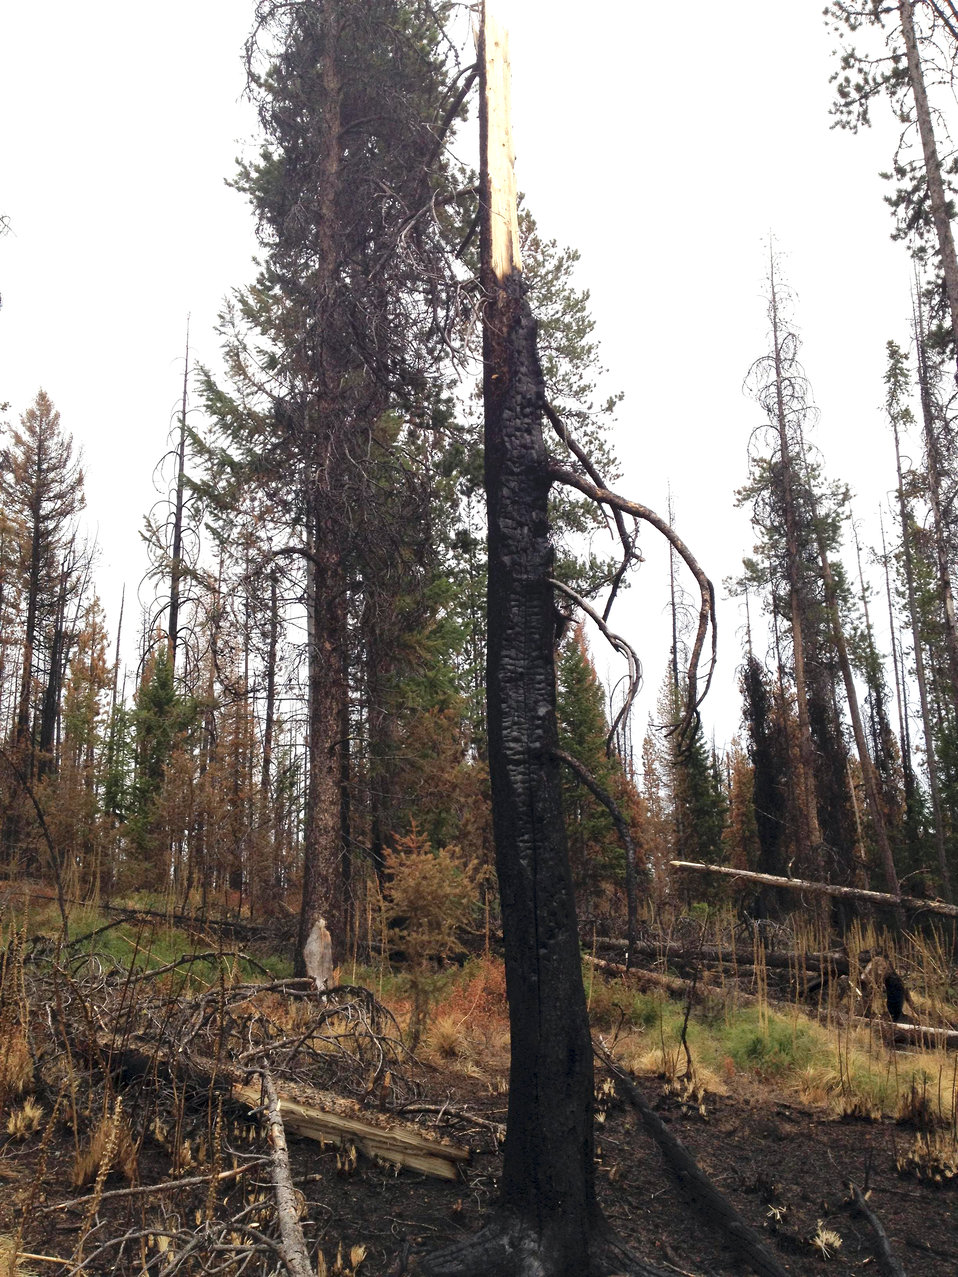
The top of this tree was snapped off from a microburst from a thunderstorm east of Horsejaw Mountain at the Gold Pan Fire. Down drafts of at least 60 miles per hour can be created by thunderstorms, which can pose serious risks for firefighters. The Gold Pan Fire in the Bitterroot National Forest near Conner, MT began by lightning on Jul. 16, 2013 by lighting have consumed approximately 17,163 acres.